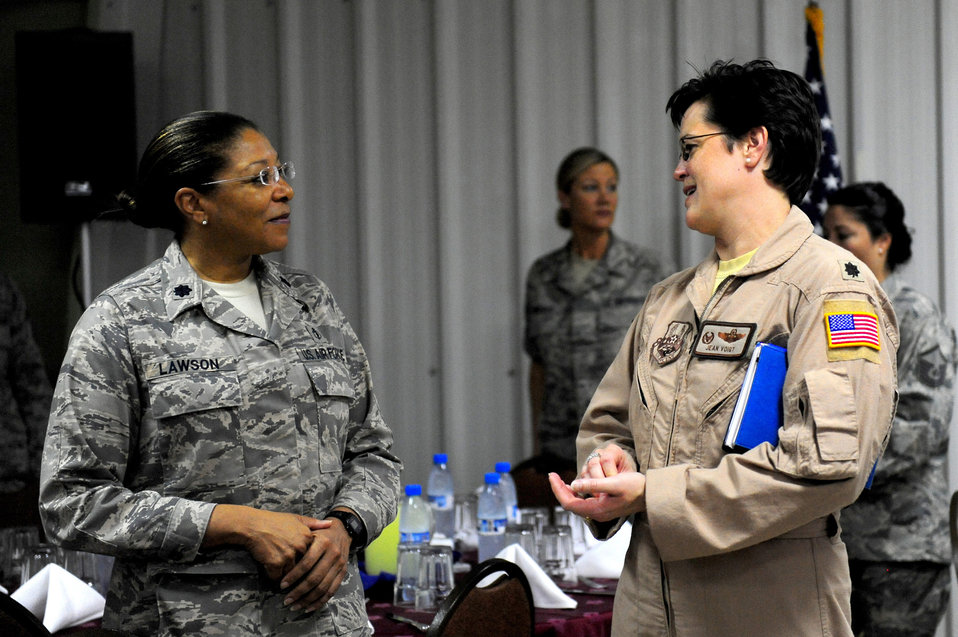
Women's History Month: Recalling women in uniform

Lieutenant Col. Theresa Lawson and Lt. Col. Jeanette Voigt shared their experiences as panel members during the 380th Air Expeditionary Wing Women's History Month symposium luncheon March 28 at an air base in Southwest Asia. Colonel Lawson is the 380th Expeditionary Medical Group Mental Health chief deployed from Sheppard Air Force Base, Texas. Colonel Voigt is the 908th Expeditionary Air Refueling Squadron commander deployed from McGuire AFB, N.J.